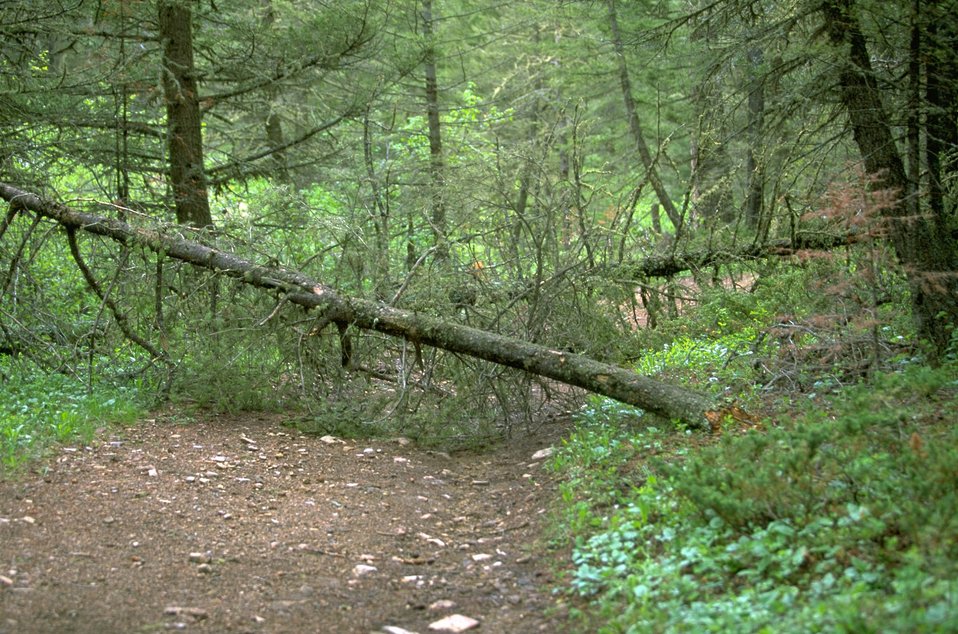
A closed dozer trail in the Judith Mountains